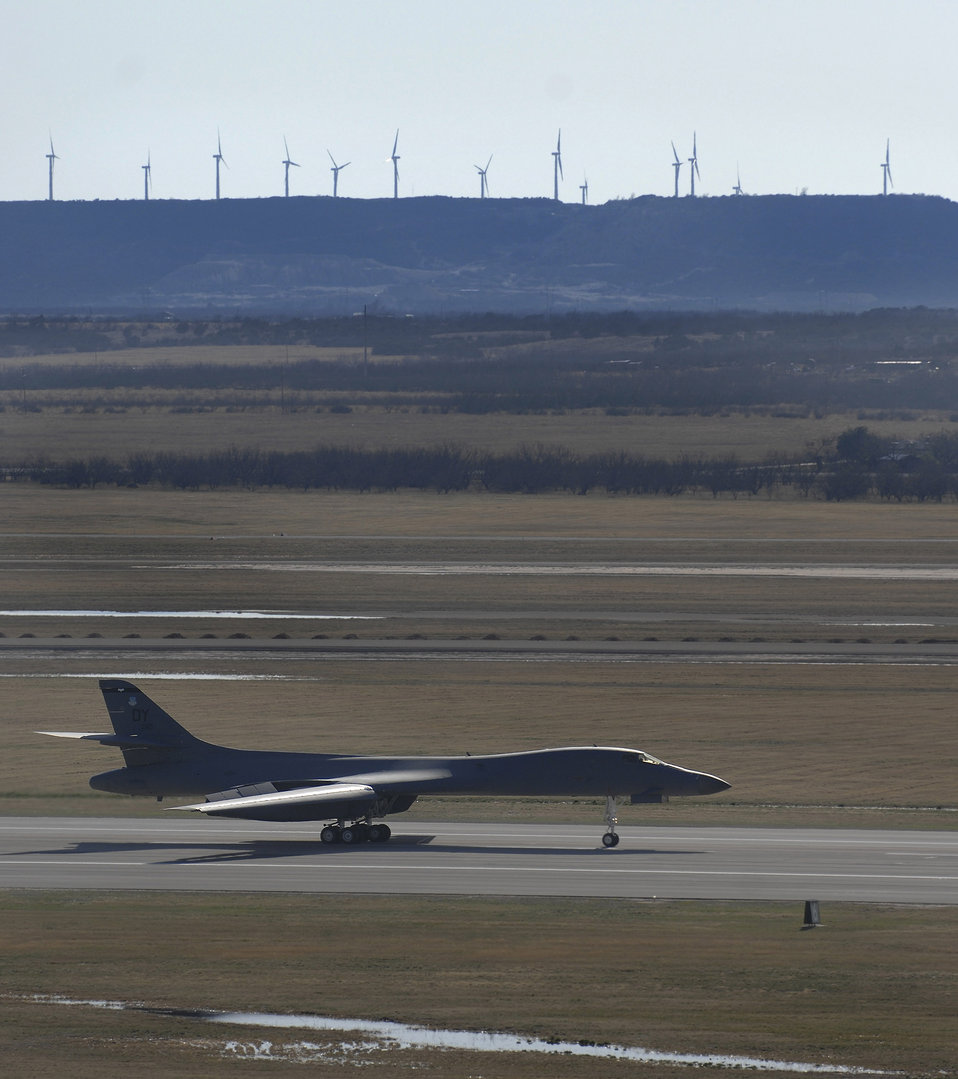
B-1B achieves first supersonic flight using synthetic fuel

A B-1B Lancer taxies on the flightline after becoming the Air Force's first aircraft to fly at the supersonic speed using a 50/50 blend of synthetic and petroleum fuel March 19 at Dyess Air Force Base, Texas. The supersonic flight occured over the White Sands Missile Range airspace in south-central New Mexico, but took off from Dyess AFB.